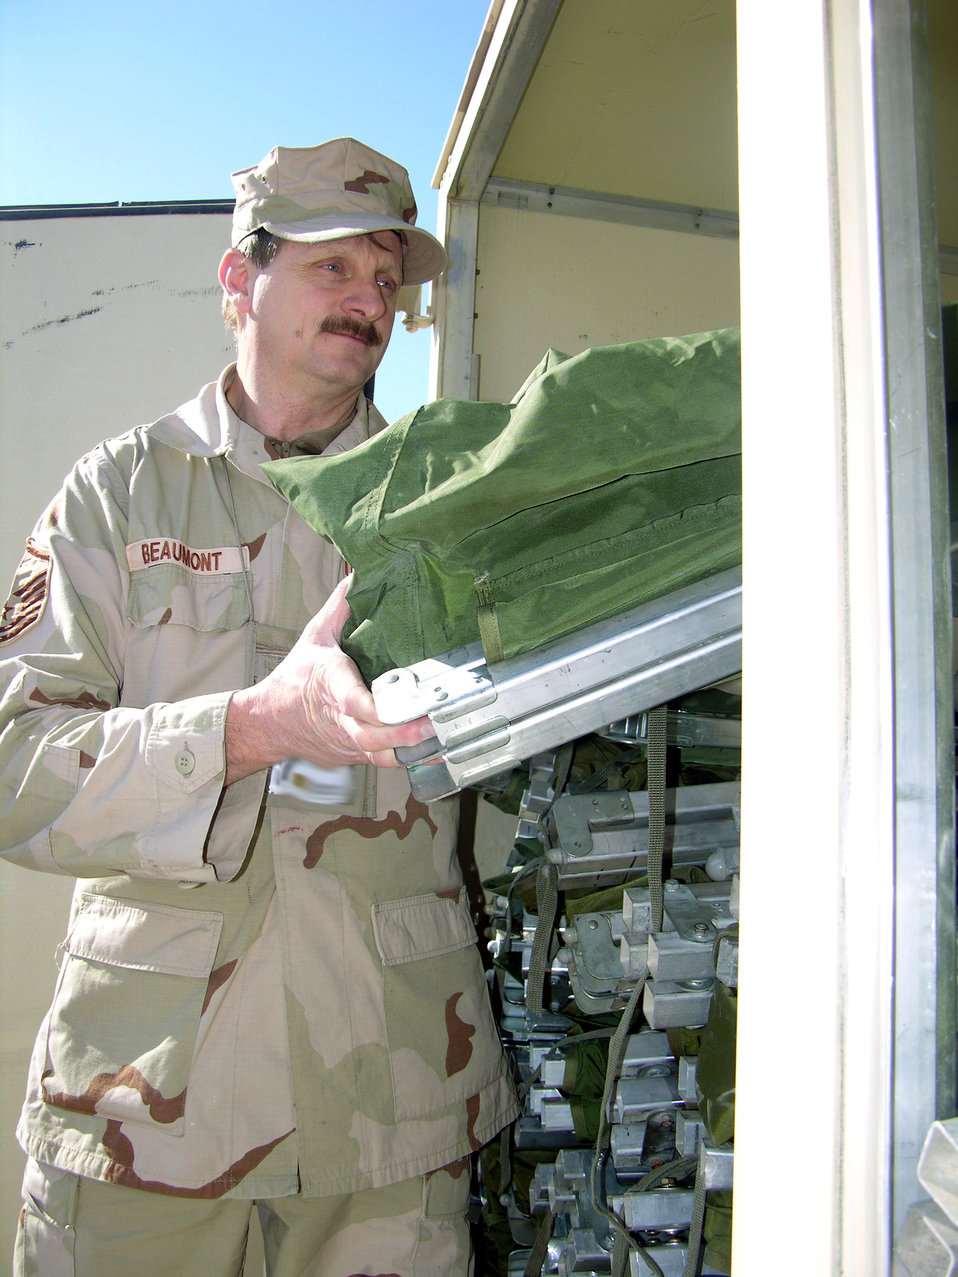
Manas Airmen handle transient surge

MANAS AIR BASE, Kyrgyzstan -- Master Sgt. Davey Beaumont puts cots away after more than 1,200 of them were setup for transient troops during a weeklong surge. Sergeant Beaumont is assigned to the 376th Expeditionary Services Squadron here.